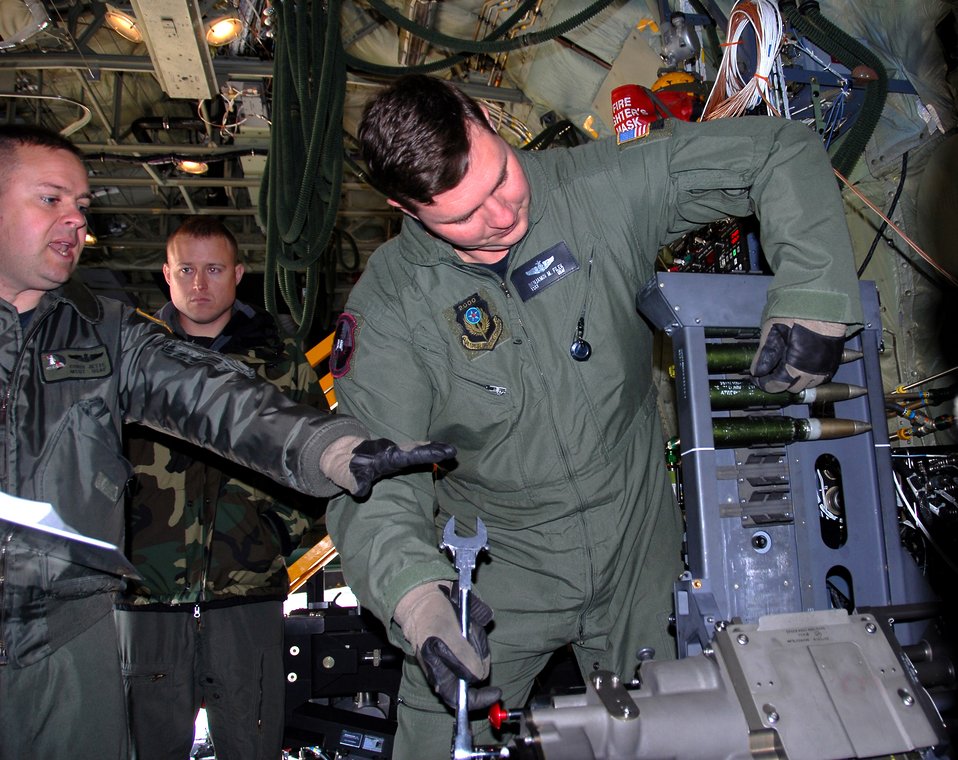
Spooky gunship armed with new cannons

Master Sgt. Chris Jette explains loading procedures for a 30mm Bushmaster cannon for an AC-130U Spooky gunship to Tech. Sgt. Ben Filek while Tech. Sgt. James Knight looks on Jan. 26 at Hurlburt Field, Fla. The 30 mm gun will eventually replace both the 40 mm cannon and 25 mm gun on U-model gunships. Sergeant Jette is an aerial gunner with the 1st Special Operations Group standardization/evaluation section at Hurlburt Field, Sergeants Filek and Knight are aerial gunners with the 19th Special Operations Squadron at Hurlburt.